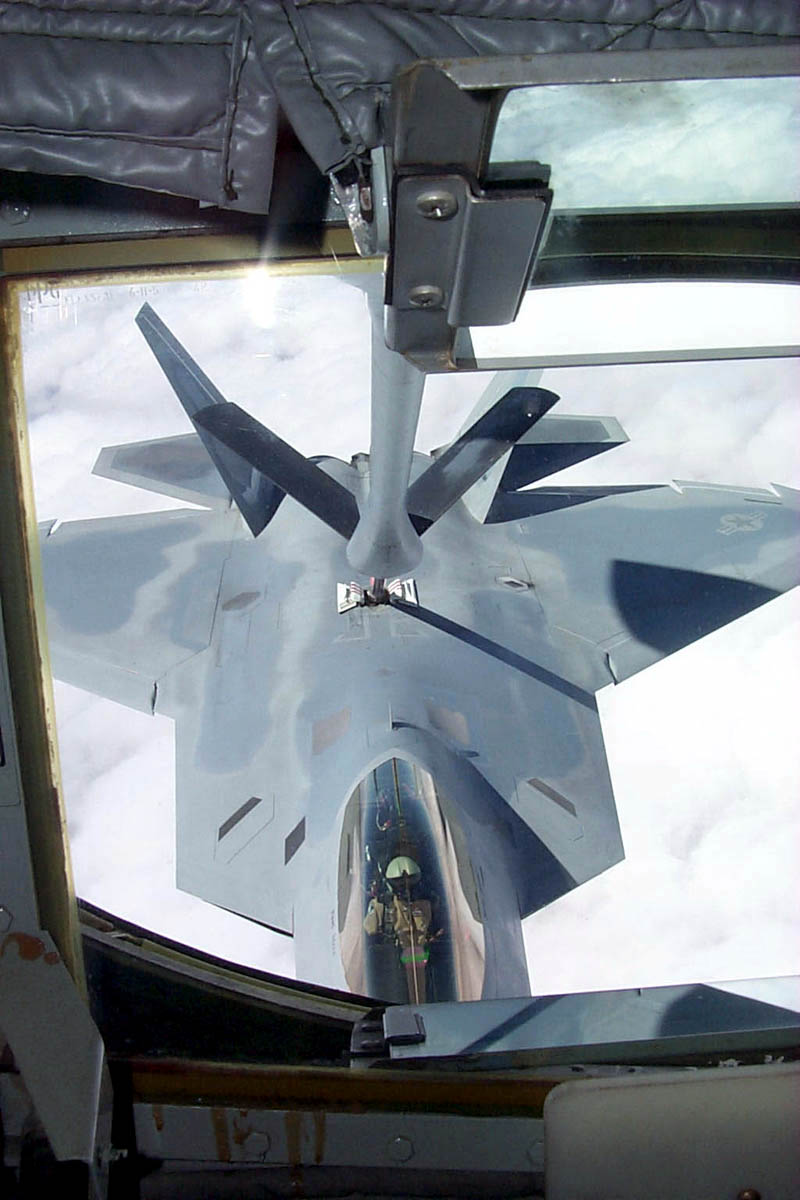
Fueling up

EDWARDS AIR FORCE BASE, Calif. -- An F/A-22 Raptor takes on fuel here. The F/A-22 combines stealth, supercruise, maneuverability and many other features enabling a first look, first shot, first kill capability that will provide continued air dominance for generations to come.